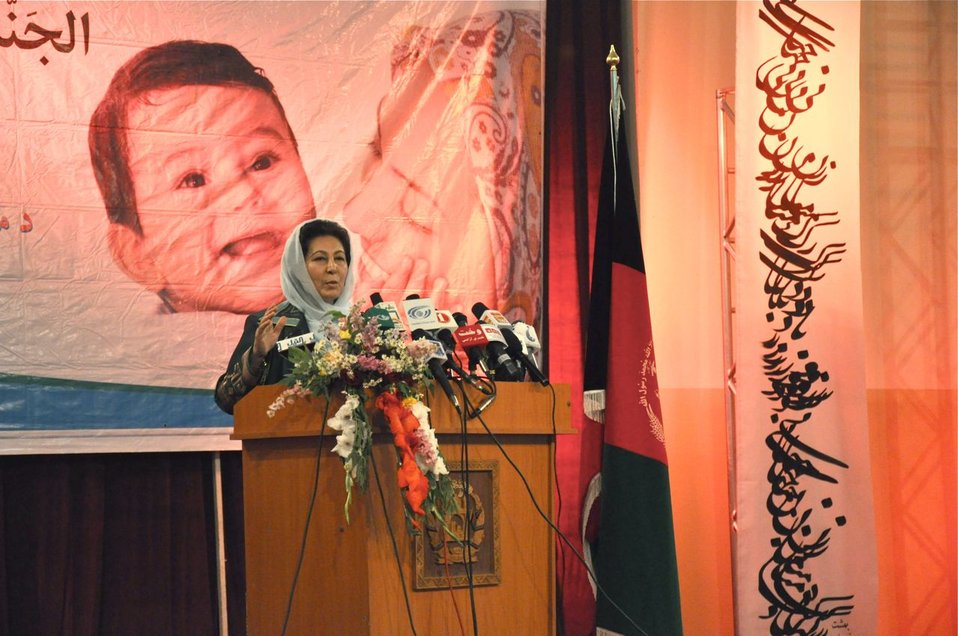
Mother's Day in Afghanistan

Minister Ghazanfar addressed the audience and spoke about the accomplishments and challenges faced by mothers in Afghanistan.